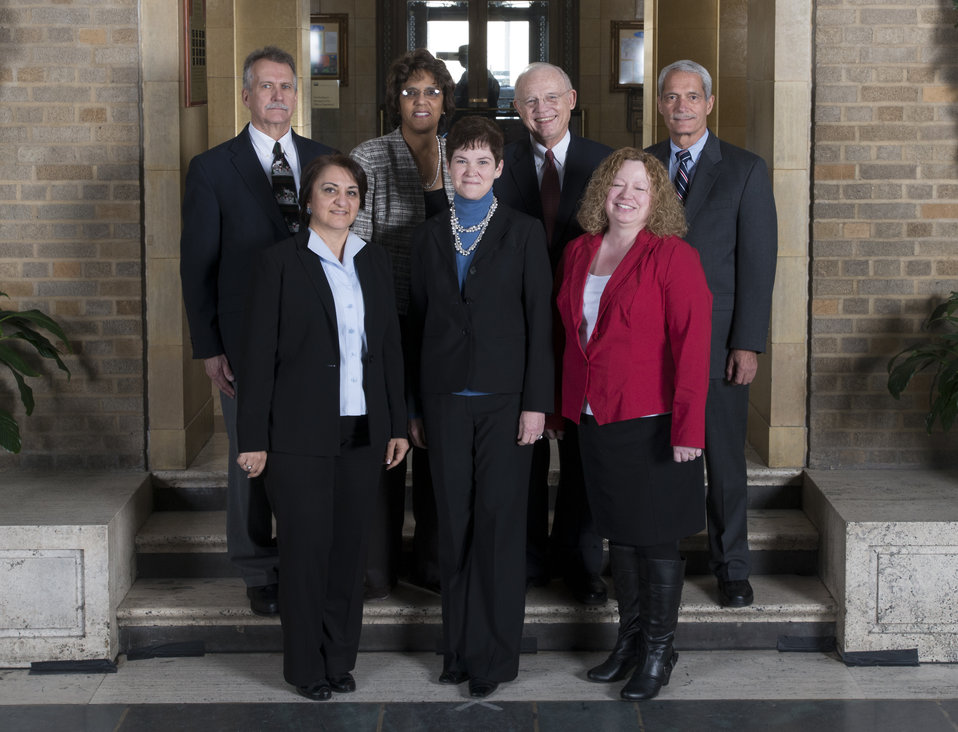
Agriculture Deputy Secretary Krysta Harden stands with the Electronic Trade Documentation Service Team, Agricultural Marketing Service (AMS) on the patio at the U.S. Department of Agriculture (USDA) in Washington, D.C. on Wednesday, Dec. 11, 2013. The team received the Secretary’s Honor Award for advancing USDA's ability to provide secure, electronic access to agricultural trade documents that facilitate U.S. producer access to export markets.